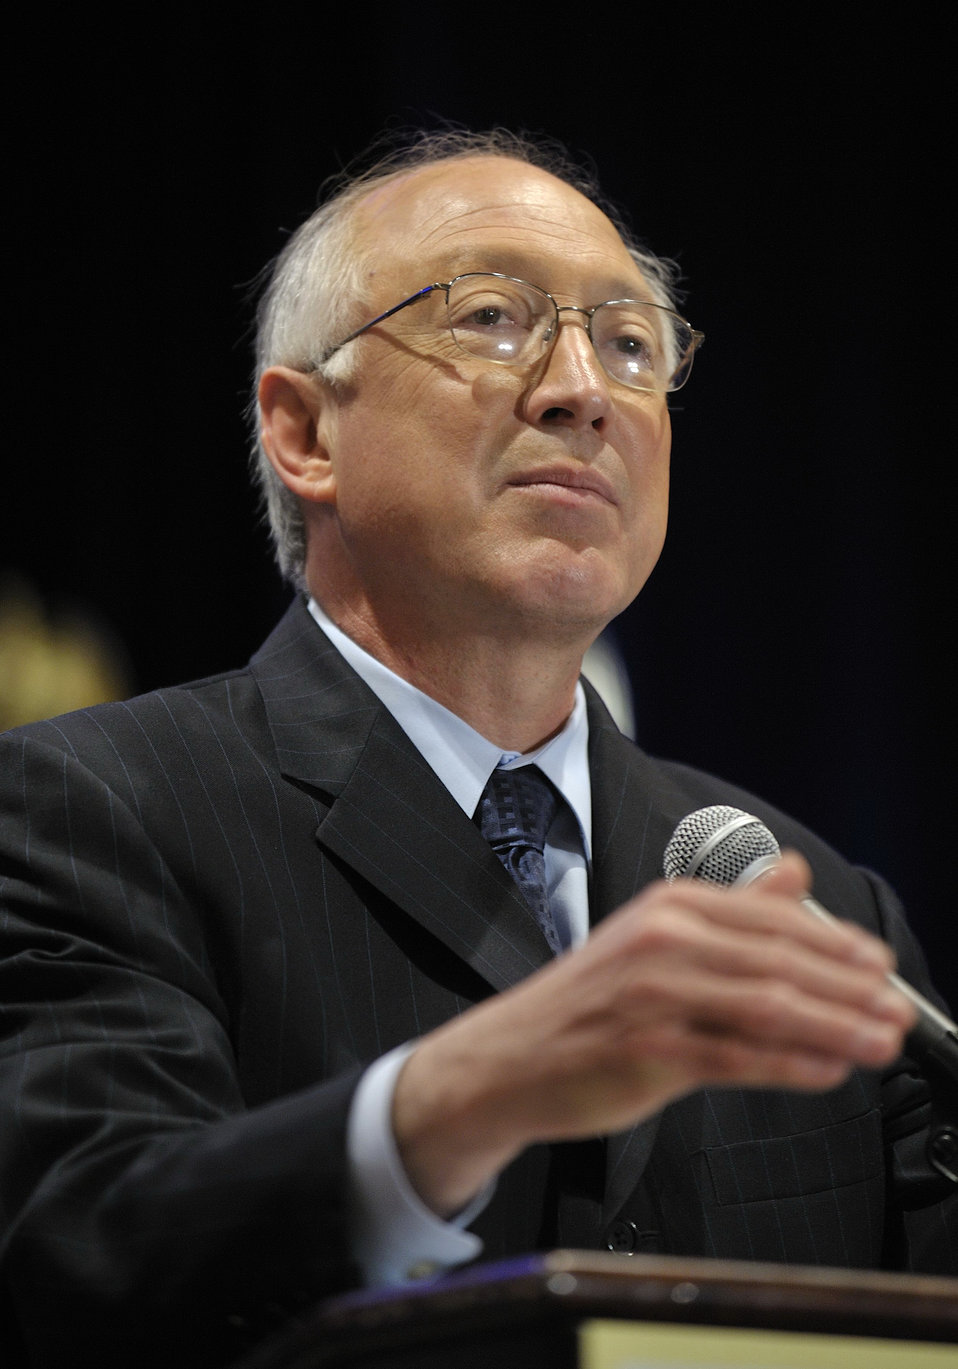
Tribal Energy Summit

Secretary Salazar delivers Keynote Address on the afternoon of May 5th.